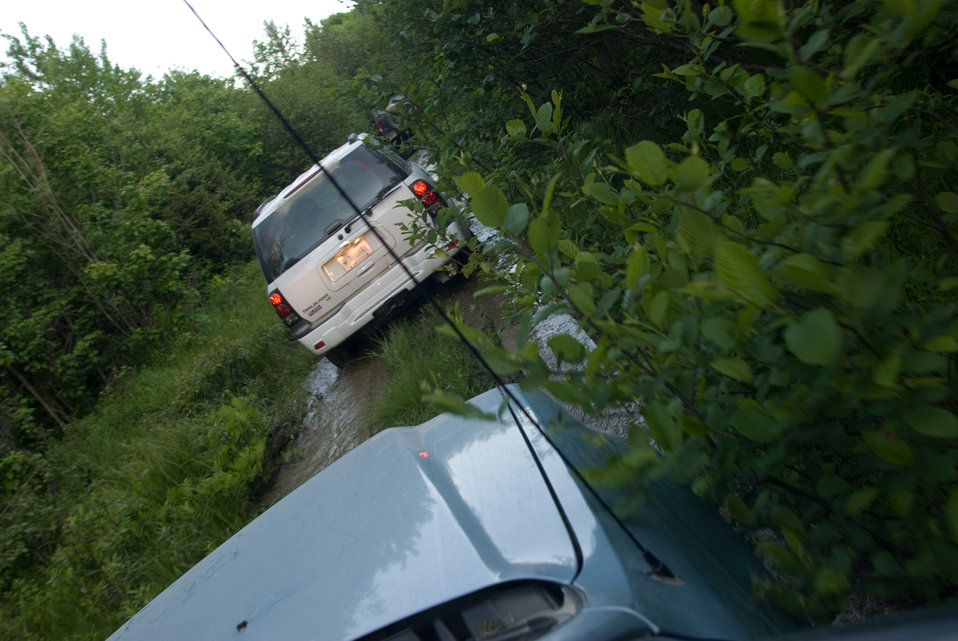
Backroads

Located miles beyond the 'main' roads, teams face overgrown and unmaintained paths in their area of operation.